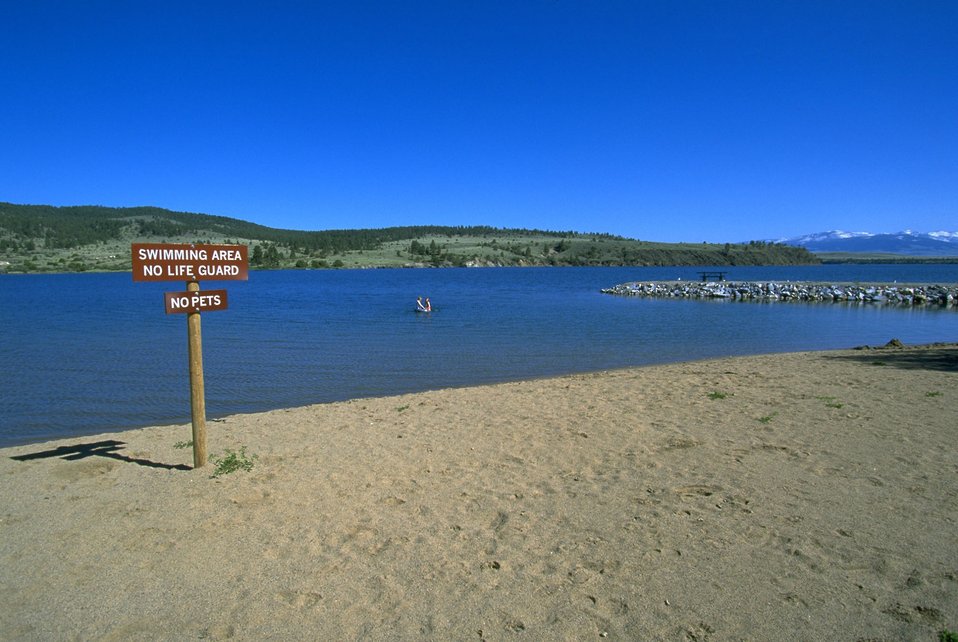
Swimming Area sign and beach at Hauser Lake